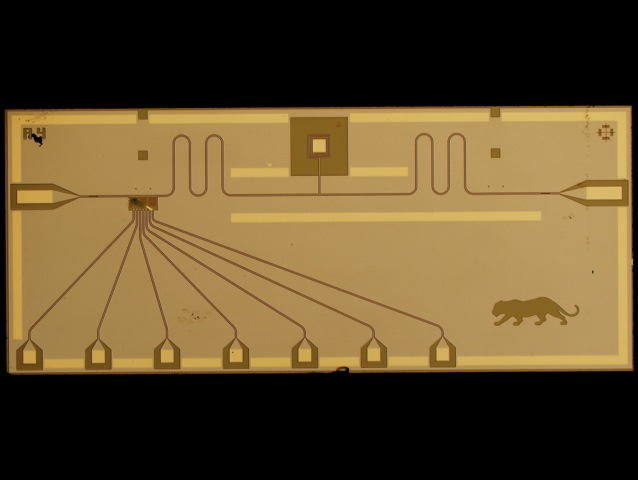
Quantum Bus Device

Micrograph of a quantum bus device similar to the one measured for this experiment. Note the Princeton tiger is 1 mm from head to tail. The spin-orbit qubits are located at the nexus of the seven gate electrodes.